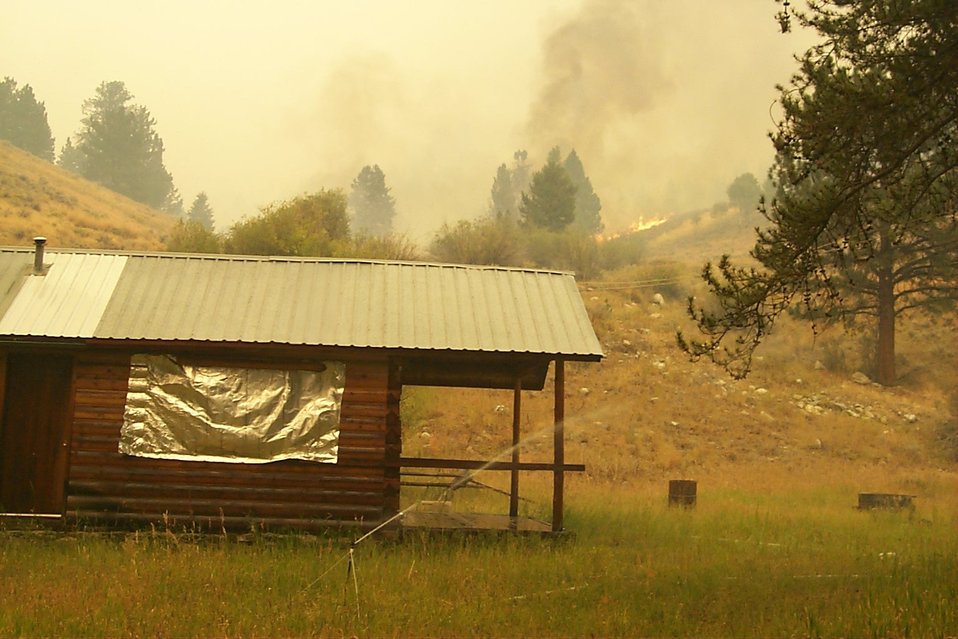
Fire retardant measures Urban interface Fire Clearwater Fire Salmon Field Office USRD Upper Snake River District